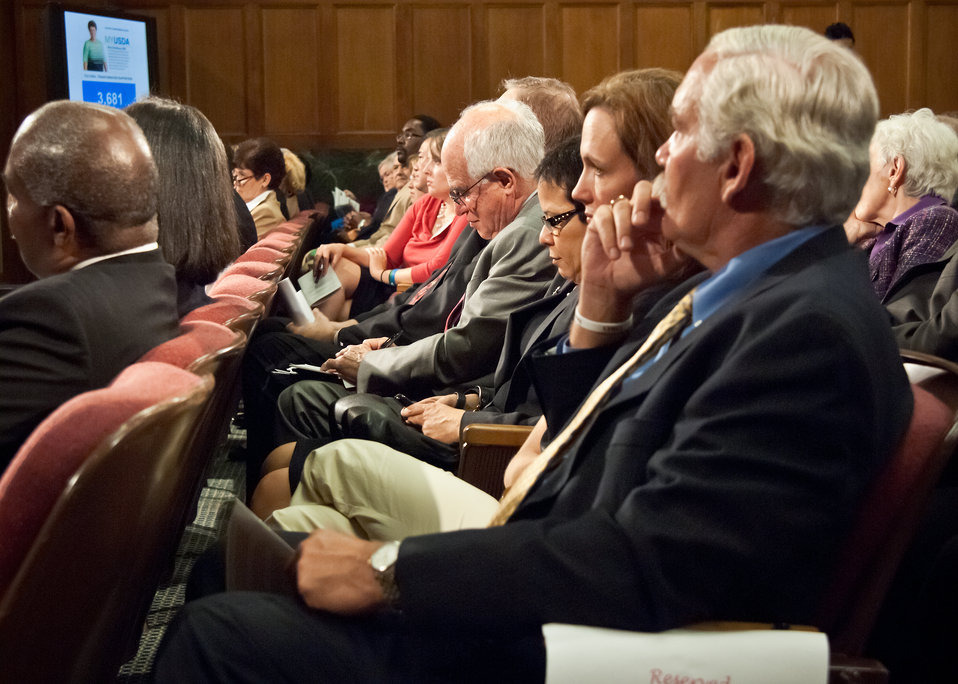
Harris Sherman, Undersecretary, Natural Resources and Environment takes notes during the panel discussion of employees representing the seven mission areas at the U.S. Department of Agriculture during the Cultural Transformation Recognition Ceremony at the Jefferson Auditorium, US Department of Agriculture in Washington, DC, on Tuesday, October 4, 2011. Cultural Transformation is the process of creating a workplace where all employees and customers are treated with dignity, respect and the opportunity for success. Recognizing the important contributions of all employees to the operation of the United States Department of Agriculture. The goal of cultural transformation is to get everyone at USDA – from the Under Secretaries to employees at every grade level, in every location - to ensure USDA is a place where there’s opportunity for all to reach their full potential. Only then can USDA provide its customers with exceptional service in an equitable manner.